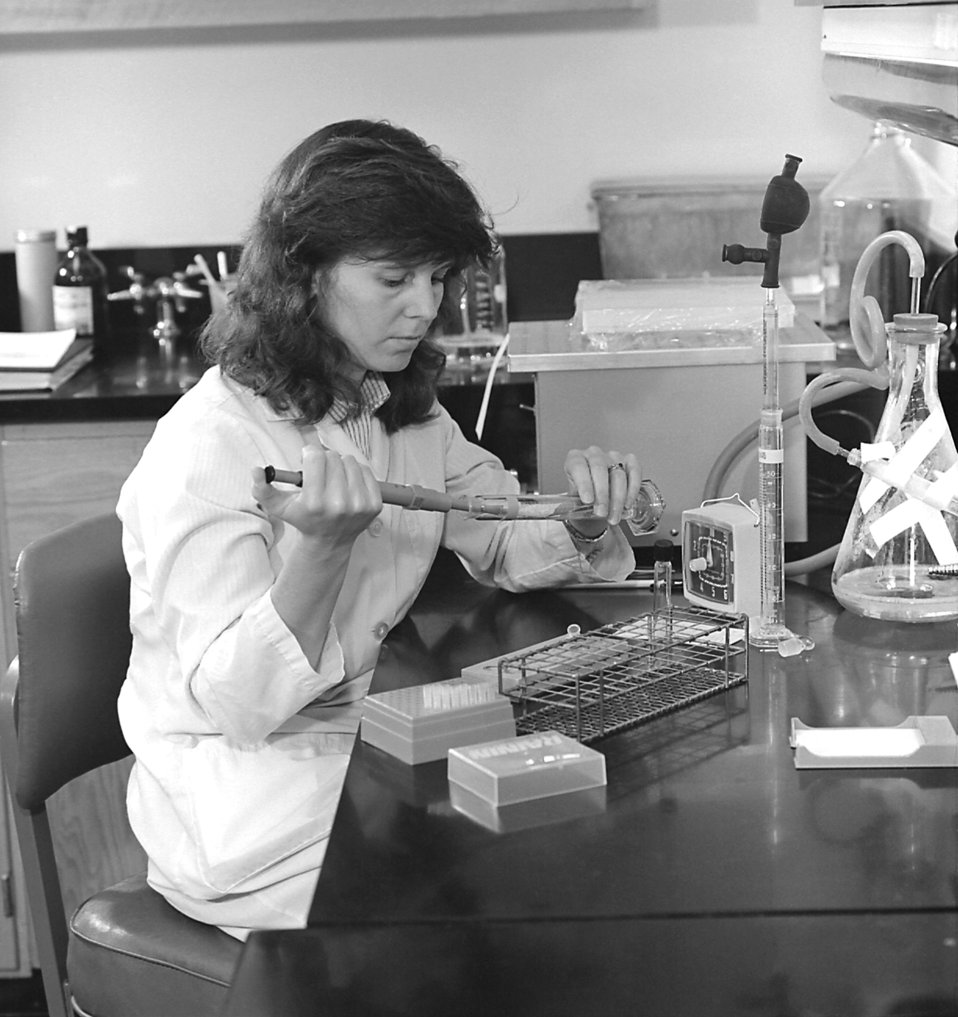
This photograph shows a CDC laboratorian conducting an investigative test using a hand-held pipette.